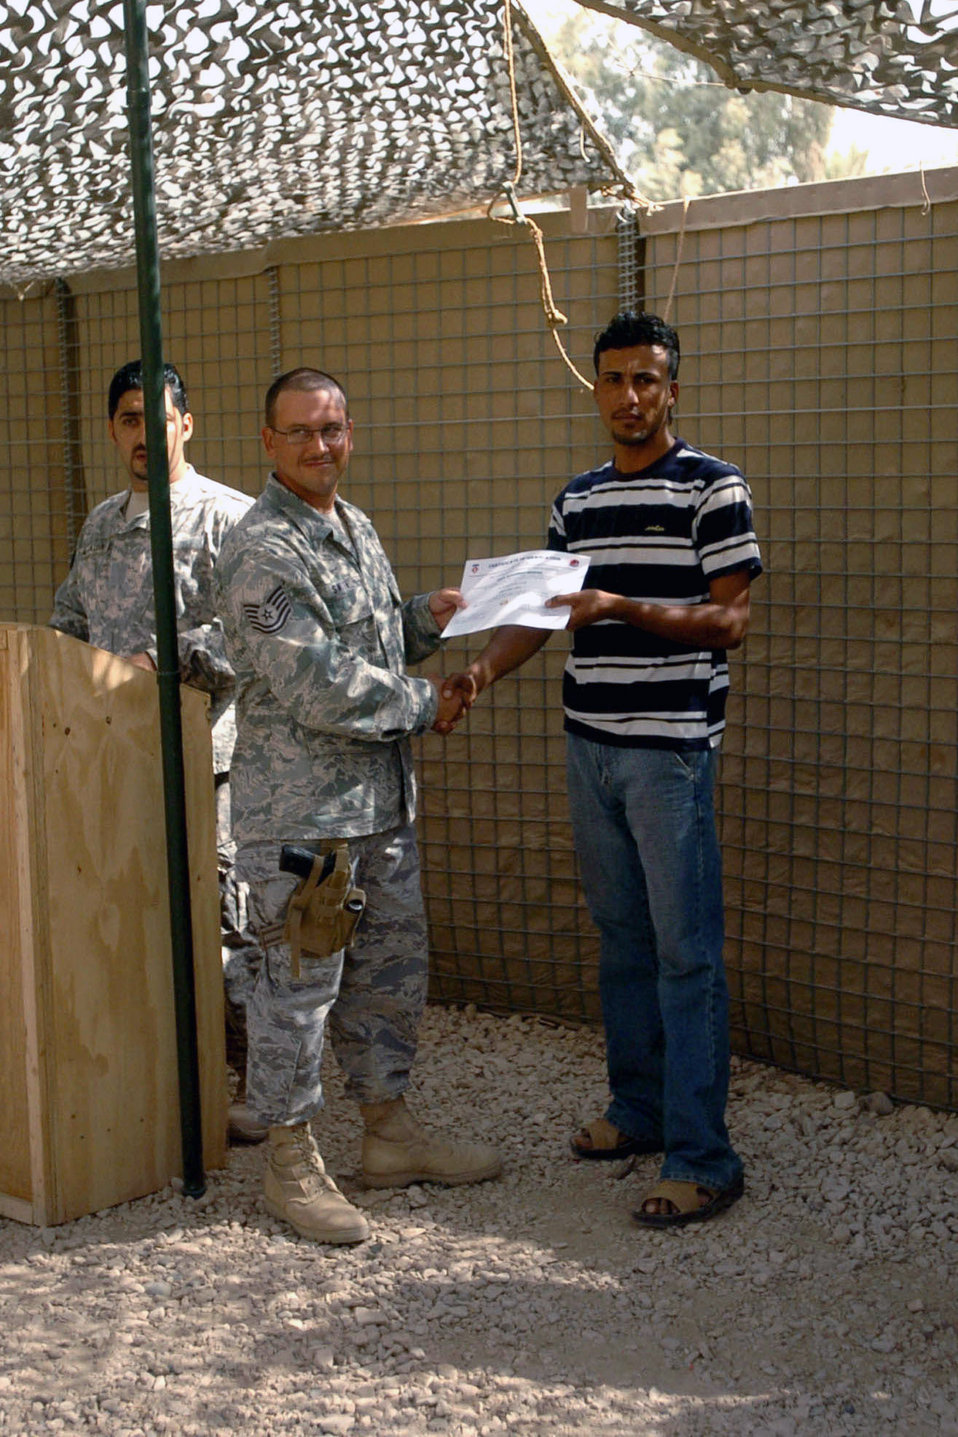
Village of Hope Training Center graduates final class

A student receives his diploma during the final Village of Hope graduation ceremony at Patrol Base Stone, Iraq, Sept. 25.